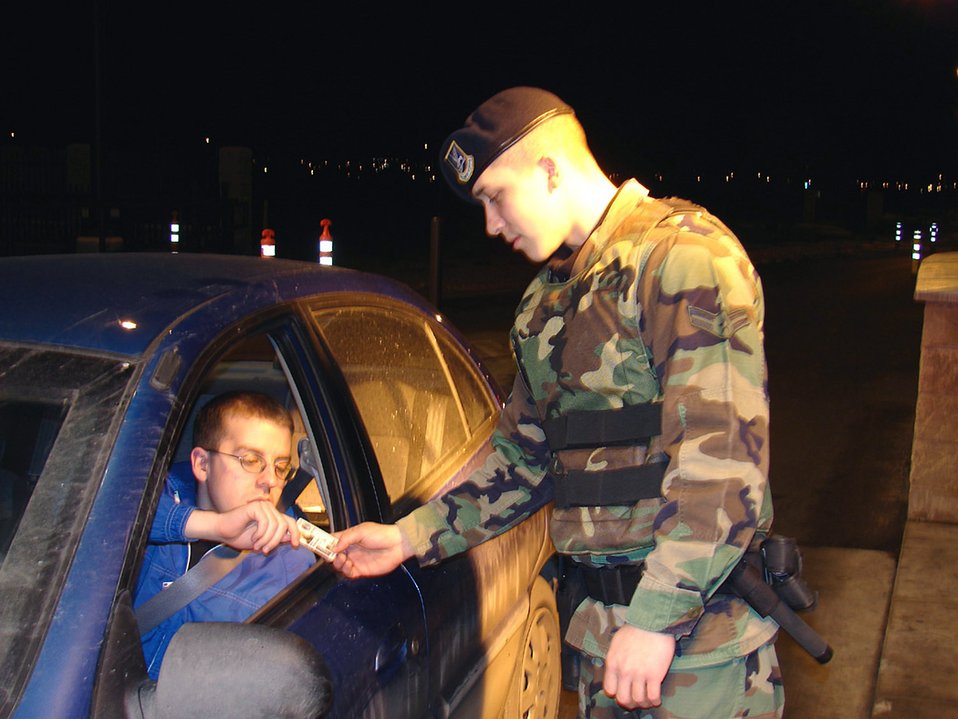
Serving through the season: Airman 1st Class Kayne Brady

Airman 1st Class Kayne Brady checks a motorist's ID card before granting access to Malmstrom Air Force Base, Mont. Airman Brady is assigned to the 341st Security Forces Squadron.